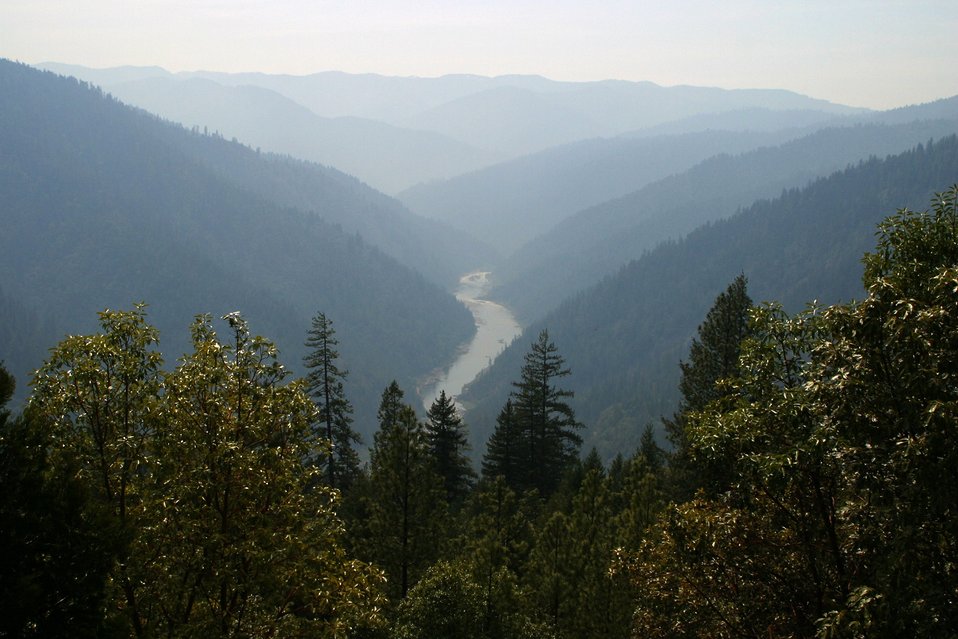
Wild section of the Rogue River from Grave Creek to Foster Bar May 19 to May 22.